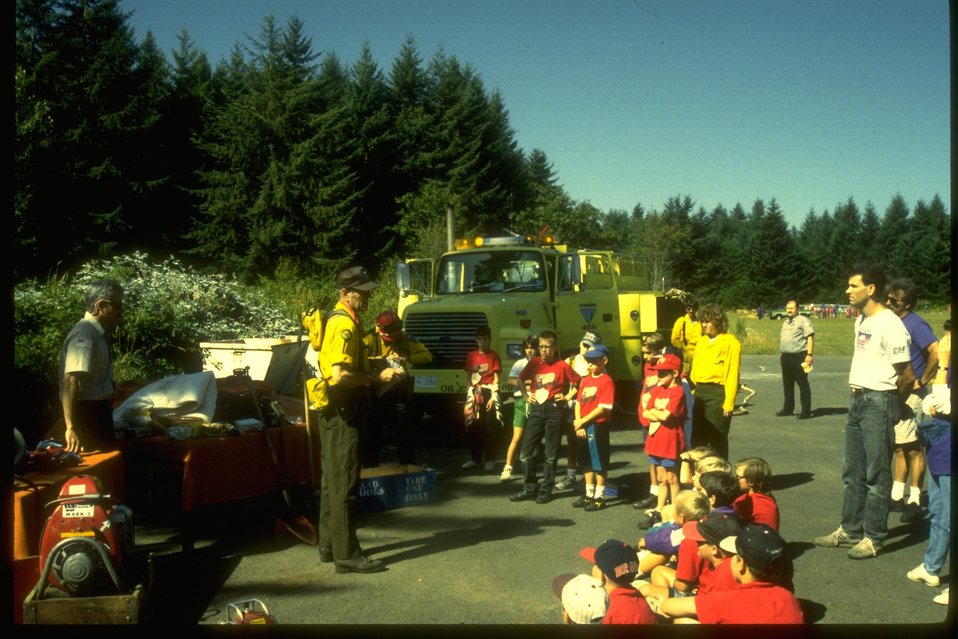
Fire prevention presentation.